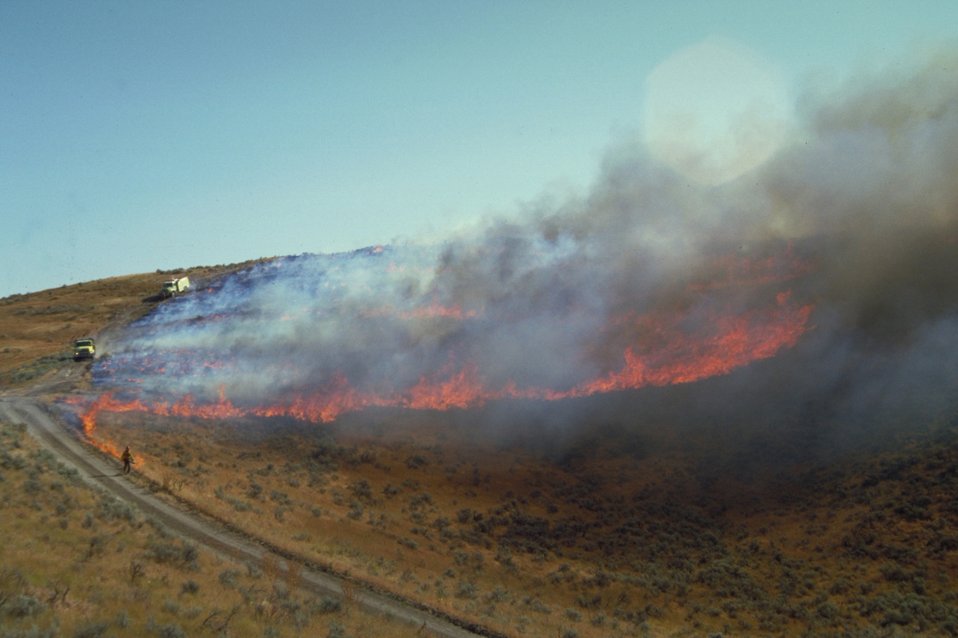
Prescribed burn Fire Season 2000 Lower Snake River District LSRD